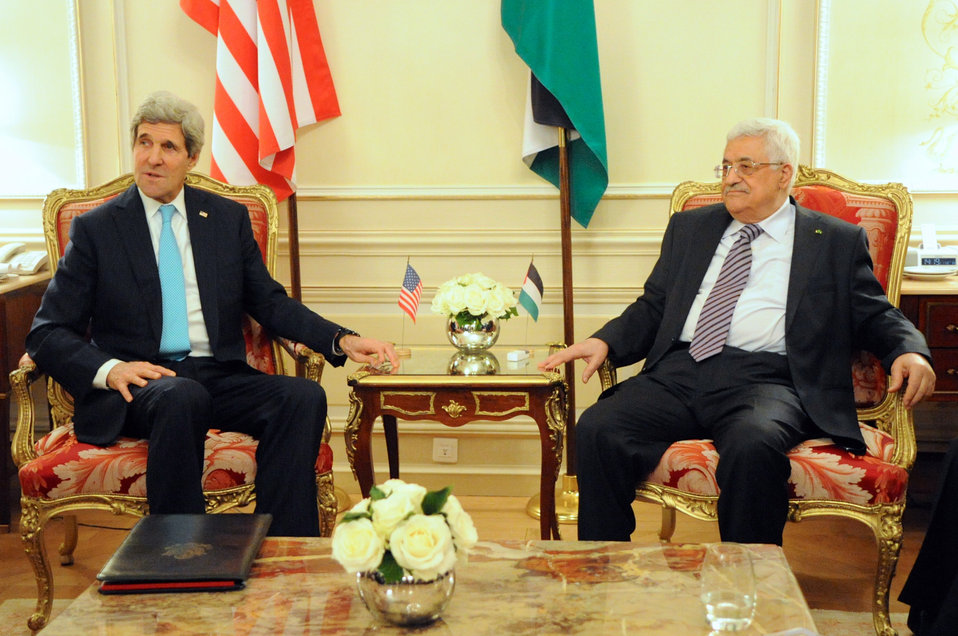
Secretary Kerry Meets With Palestinian Authority President Abbas

U.S. Secretary of State John Kerry meets with Palestinian Authority President Mahmoud Abbas, for the second consecutive day, in Paris, France, on February 20, 2014.